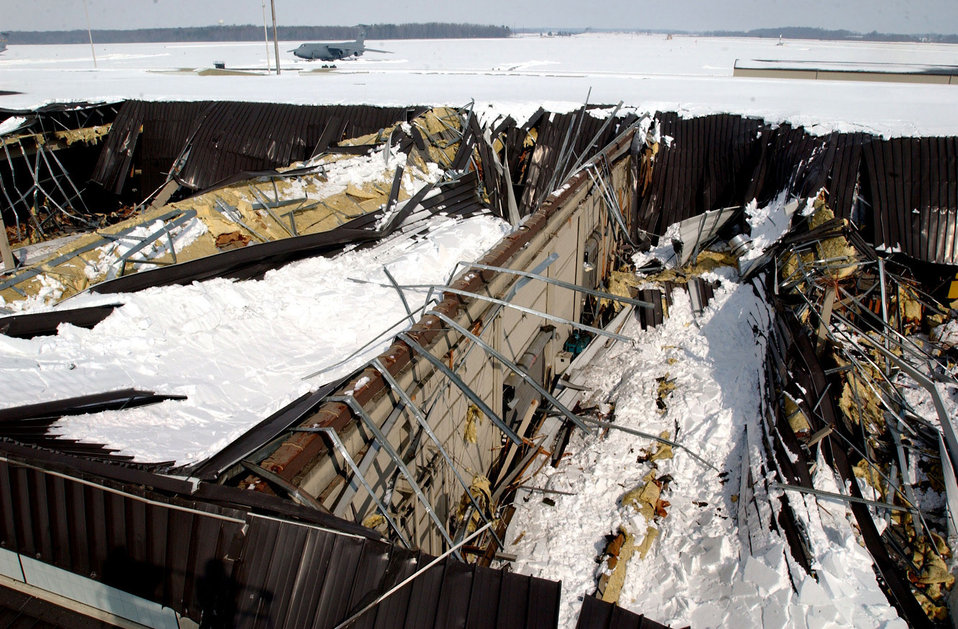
Snow causes building collapse

DOVER AIR FORCE BASE, Del. (AFPN) -- Two sections of the 436th Aerial Port Squadron warehouse here collapsed Feb. 18 after the recent snow storm. No one was injured in the collapse that caused more than an estimated $1 million in damages. The damage covers two of the six cargo processing bays in the facility.